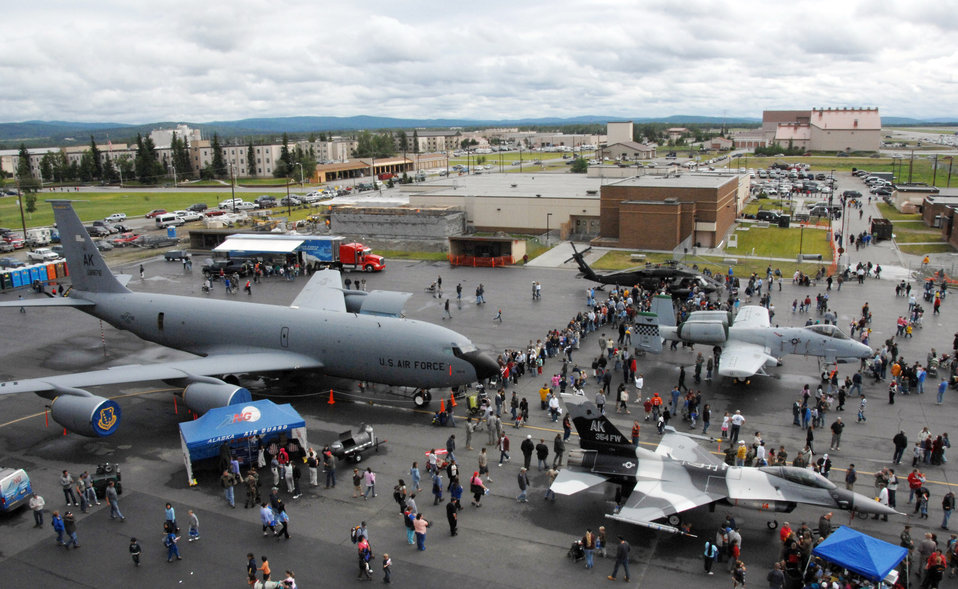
Thunderbirds 'Soar into Solstice' at Eielson

An estimated 6,000 people tour aircraft during the June 24 airshow at Eielson Air Force Base, Alaska. The